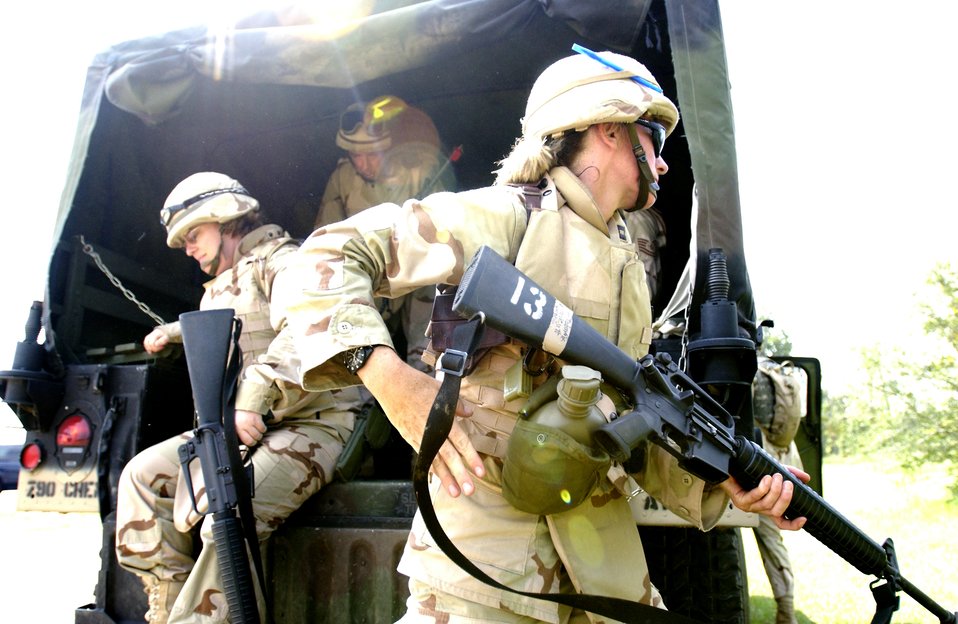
Air Force trains to fill Army deployments

Capt. Elaine Hunnicutt dismounts from a Humvee to perform security duties during the land navigation portion of her training Aug. 30 at Camp Shelby, Miss. Camp Shelby is one of several Army installations providing training to military personnel preparing to deploy to Southwest Asia.